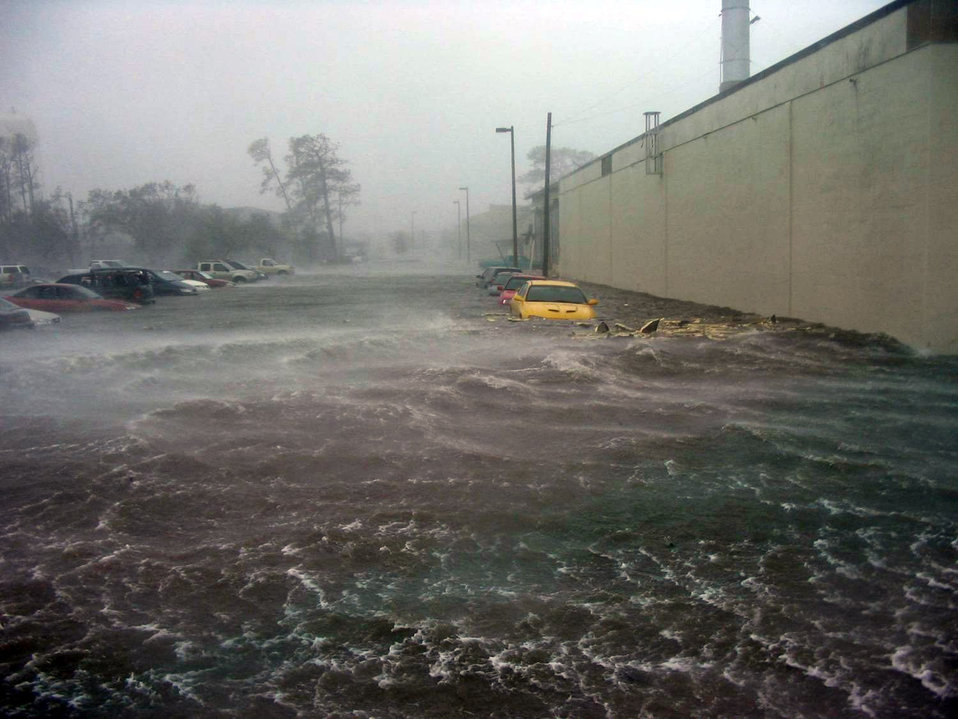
People venture outside Keesler shelters

KEESLER AIR FORCE BASE, Miss. -- As Hurricane Katrina struck the base, rising waters swallowed cars parked along streets. The base and the 6,000 sheltered military students, permanent party, civilians and their families survived the Category 4 hurricane with no casualties. The initial damage was catastrophic to base infrastructure. The base is currently in the assessment and recovery stage.